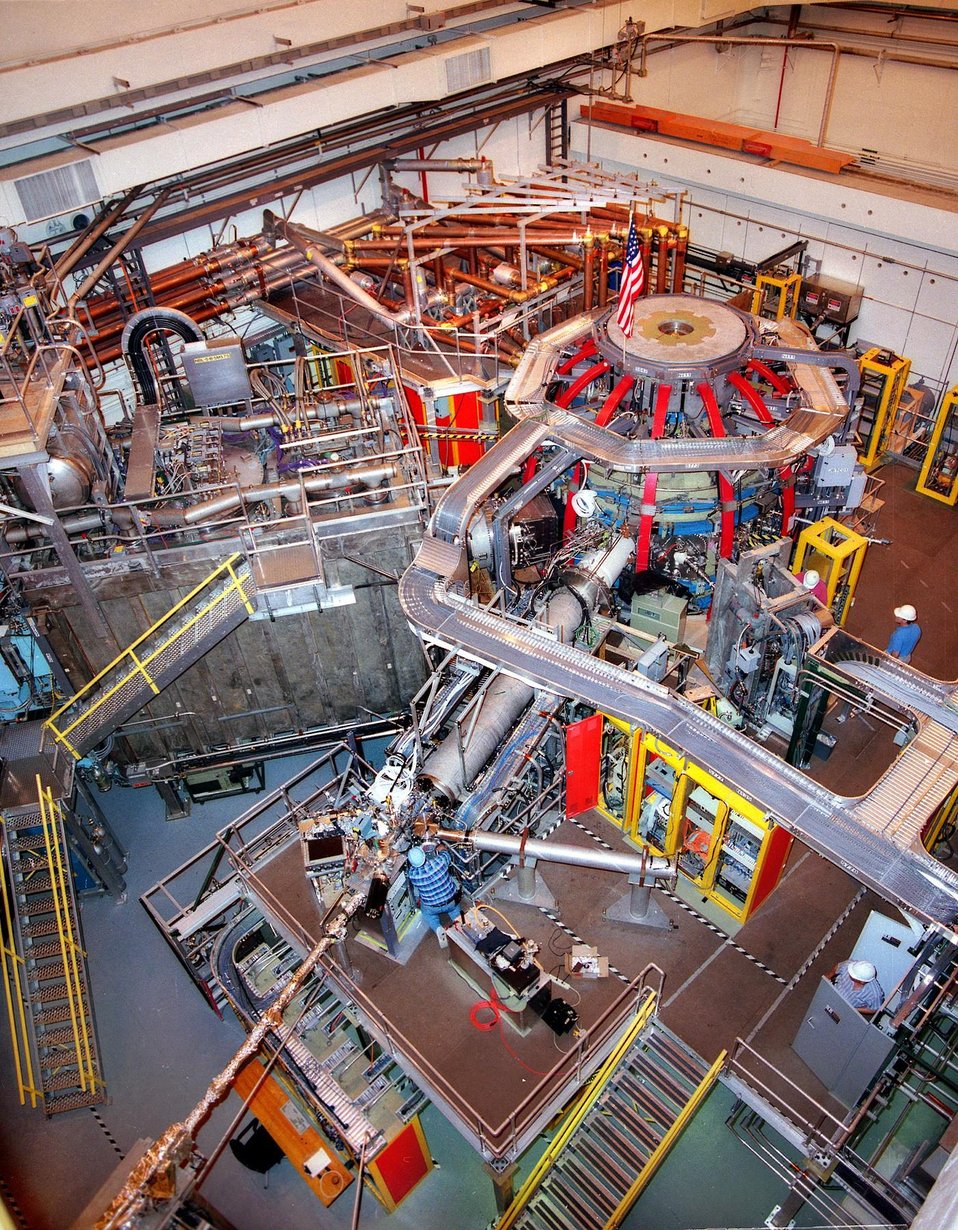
THE NATIONAL SPHERICAL TORUS EXPERIMENT AT THE PRINCETON PLASMA PHYSICS LABORATORY.

THE NATIONAL SPHERICAL TORUS EXPERIMENT IS AN INNOVATIVE MAGNETIC FUSION DEVICE THAT WAS CONSTRUCTED BY THE PRINECTON PLASMA PHYSICS LAB IN COLLABORATION WITH THE OAK RIDGE NATIONAL LAB, COLUMBIA UNIVERSITY AND THE UNIVERSITY OF WASHINGTON AT SEATTLE. NSTX WILL BE USED TO STUDY THE PHYSICS PRINCIPLES OF SPHERICALLY SHAPED PLASMAS-HOT IONIZED GASES IN WHICH NUCLEAR FUSION WILL OCCUR UNDER THE APPROPRIATE CONDITIONS OF TEMPERATURE, DENSITY, AND CONFINEMENT IN A MAGNETIC FIELD.